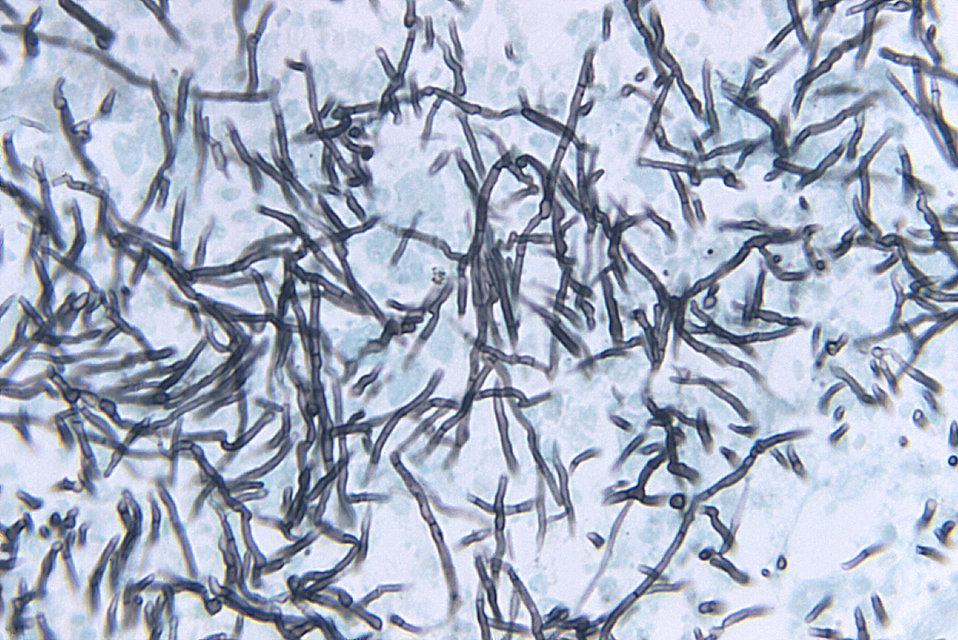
Magnified 500X, four times greater than PHIL 10919, this photomicrograph depicted numbers of mycelia of Ochroconis constricta, fungi, formerly known as Scolecobasidium constrictum, which were present in this kidney tissue sample of an infected trout.